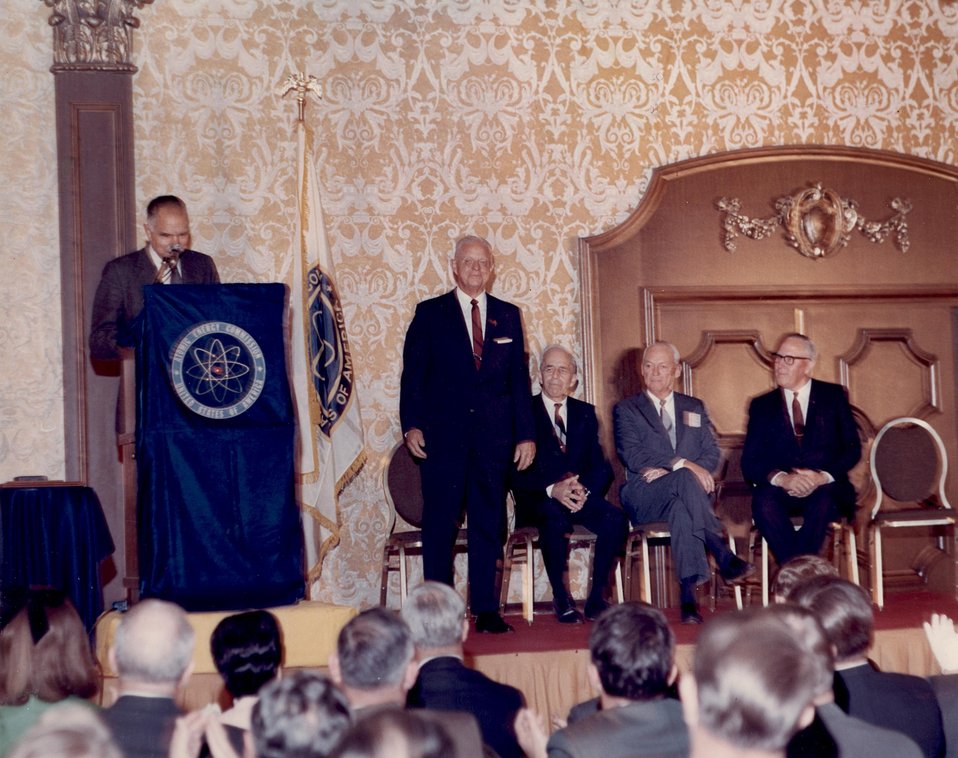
Enrico Fermi Award Ceremony. Imperial Ballroom. San Fransisco Hilton Hotel. 5:30 p.m., December 2, 1969. Fermi Award. Recipient: Walter Zinn. Date: Dec. 2, 1970.